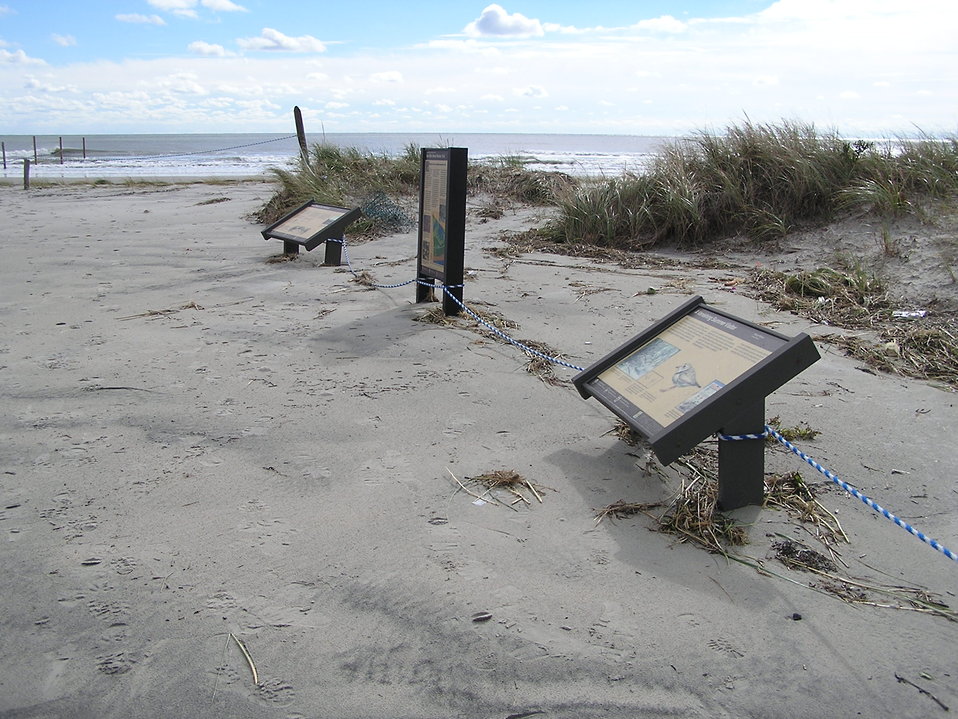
Hurricane Sandy damaged Cape May National Wildlife Refuge (NJ)

Wayside exhibits at north boundary of Cape May National Wildlife Refuge's Two Mile Beach Unit buried in sand (previously waist-high).